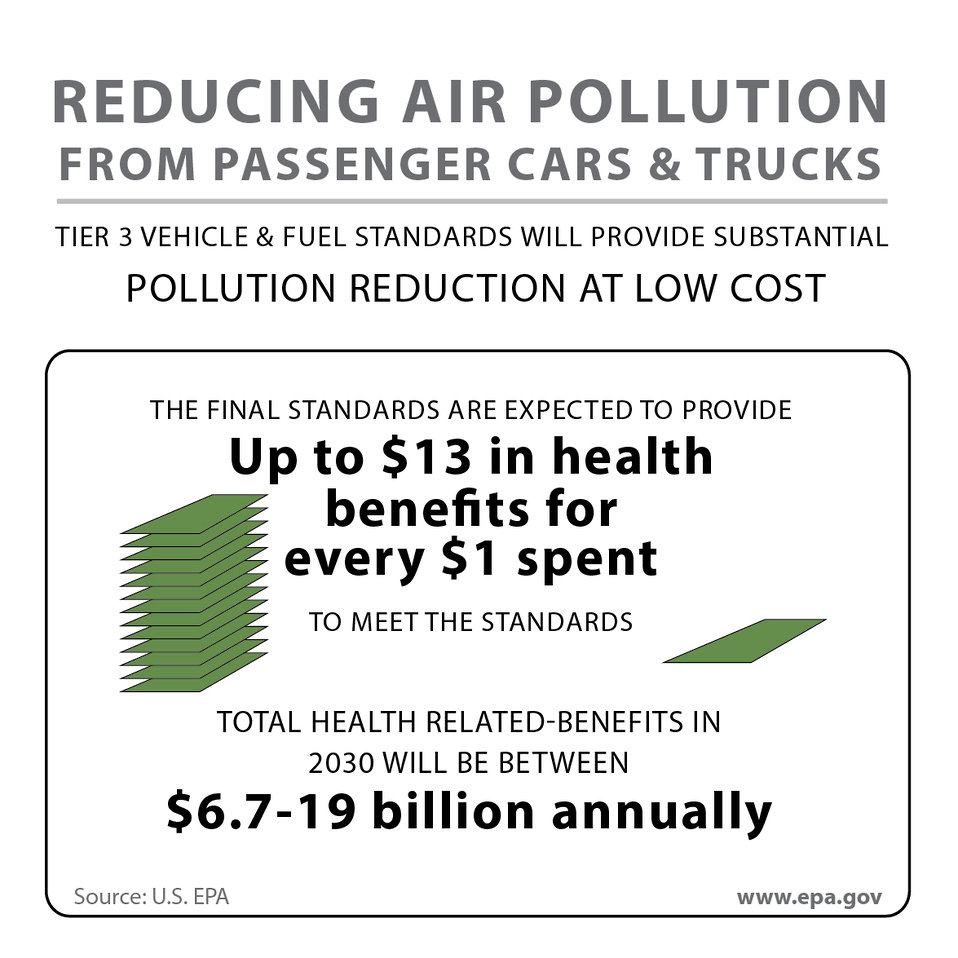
Reducing Air Pollution From Passenger Cars and Trucks

By 2030, the annual health benefits of our vehicle and fuel standards will be worth an estimated $6.7 to $19 billion annually. For every dollar spent to meet the standards, we expect to see $13 of health benefits in return.